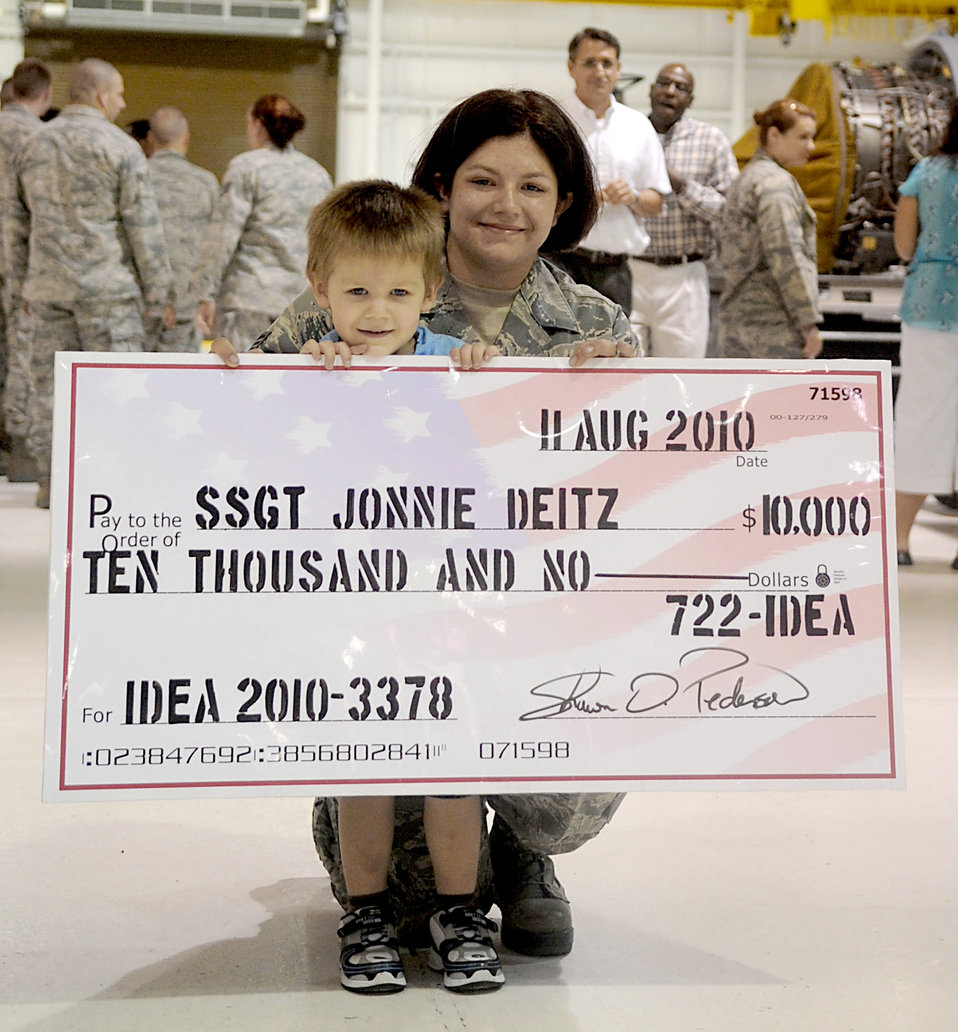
Airman earns $10k through IDEA program

Staff Sgt. Jonnie Dietz poses with her son, Brian, after receiving a check for $10,000 from the Air Force Innovative Development Through Employee Awareness Program Aug. 12, 2010 at Seymour Johnson Air Force Base, N.C. The IDEA Program awards Airmen, who have smart proposals that lead to improvements or monetary savings, with payments based on the merits of their recommendation. Sergeant Deitz's idea could save the Air Force $359,000. Sergeant Dietz is a 4th Component Maintenance Squadron aerospace propulsion journeyman.